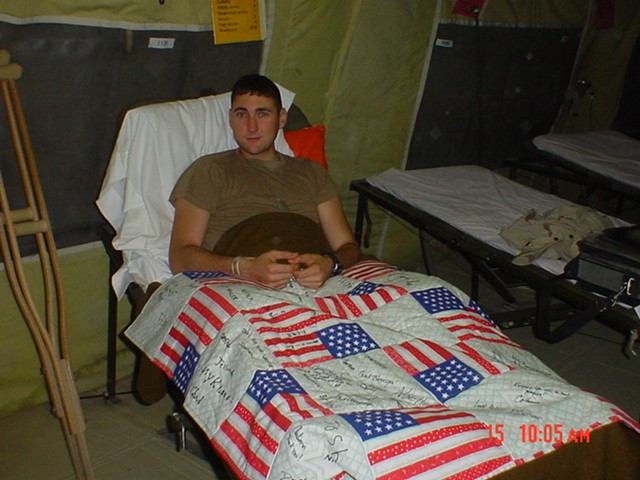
Support for wounded warriors reaches across America

BALAD AIR BASE, Iraq -- Army Cpl. Aaron Webber uses a lap quilt stitched by the